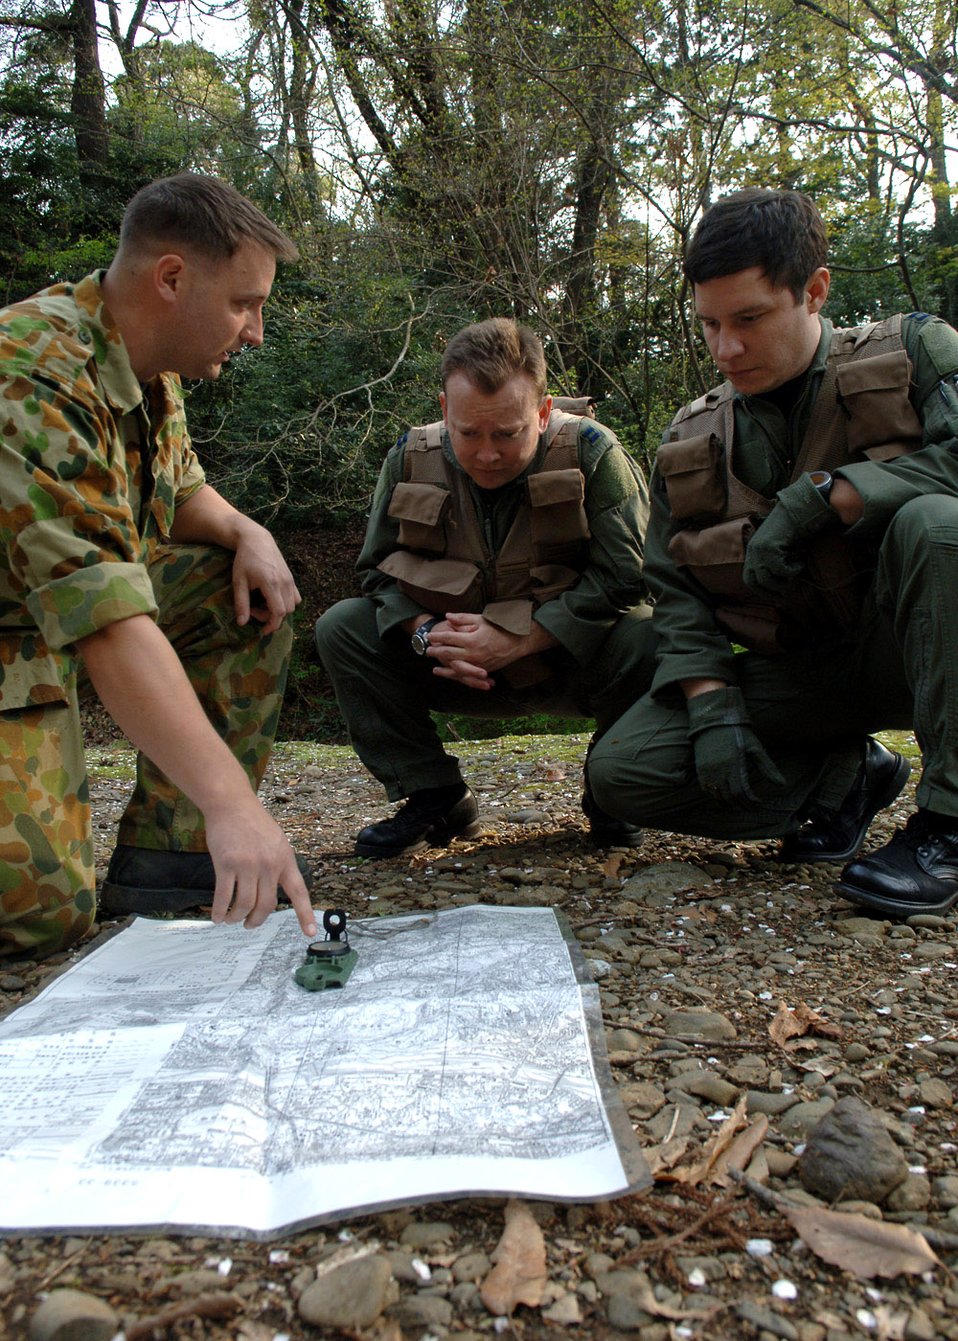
Training to survive

Staff Sgt. Daniel Roman trains Captains Gregory Davis and Pierre Alvarado on compass usage and mapping April 10 at the Tama Hills Recreation Center near Yokota Air Base, Japan. Sergeant Roman is a a survival, evasion, resistance and escape specialist from the 374th Operational Support Squadron. SERE specialists are a small specialized career field in the Air Force who train members from all branches of the military on how to survive in all environments and conditions. Captains Davis and Alvarado are from the 36th Airlift Squadron